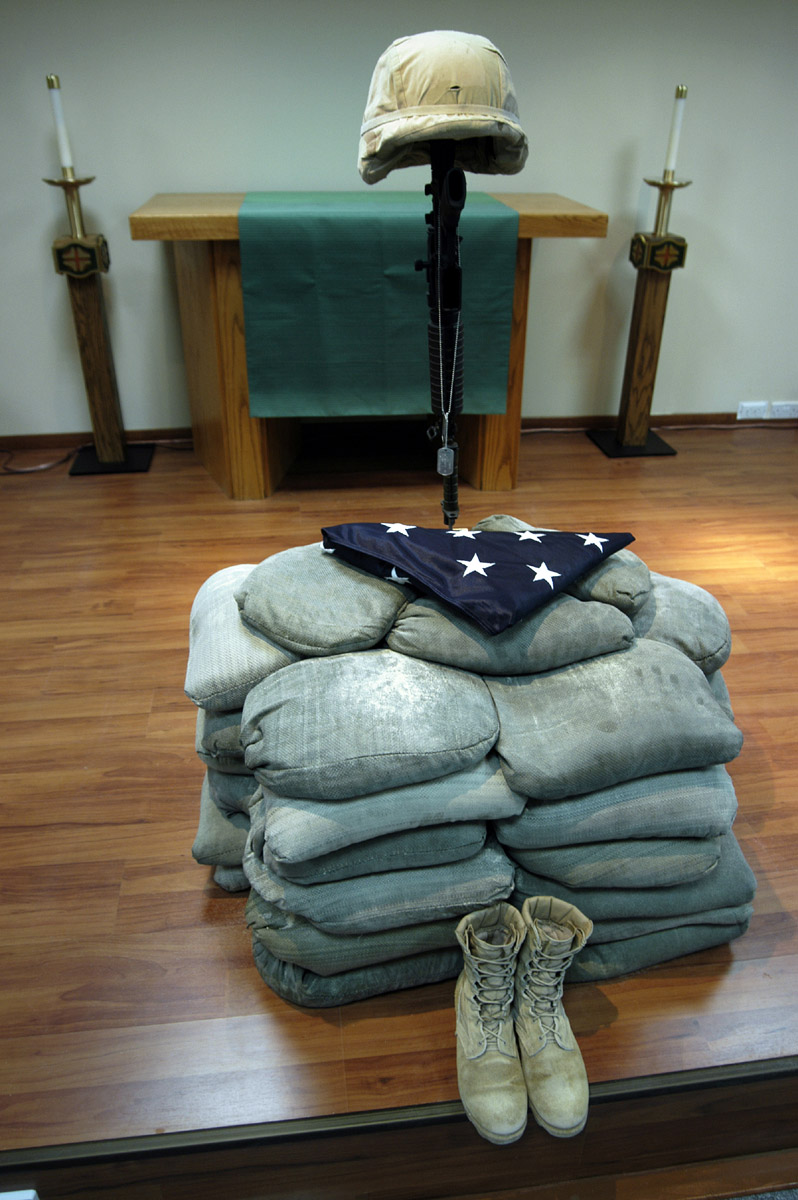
Operation Iraqi Freedom

SOUTHWEST ASIA -- A final memorial tribute to Airman 1st Class Elizabeth Jacobson sits at the base chapel Oct 6. The helmet and identification tags represent the fallen servicemember, the combat boots signify the final march of the last battle and the inverted rifle with a bayonet symbolize a time for prayer and a break in the action to pay tribute to a fallen comrade. Airman Jacobson was deployed to a forward-deployed location supporting Operation Iraqi Freedom and was killed in the line of duty Sept. 28.